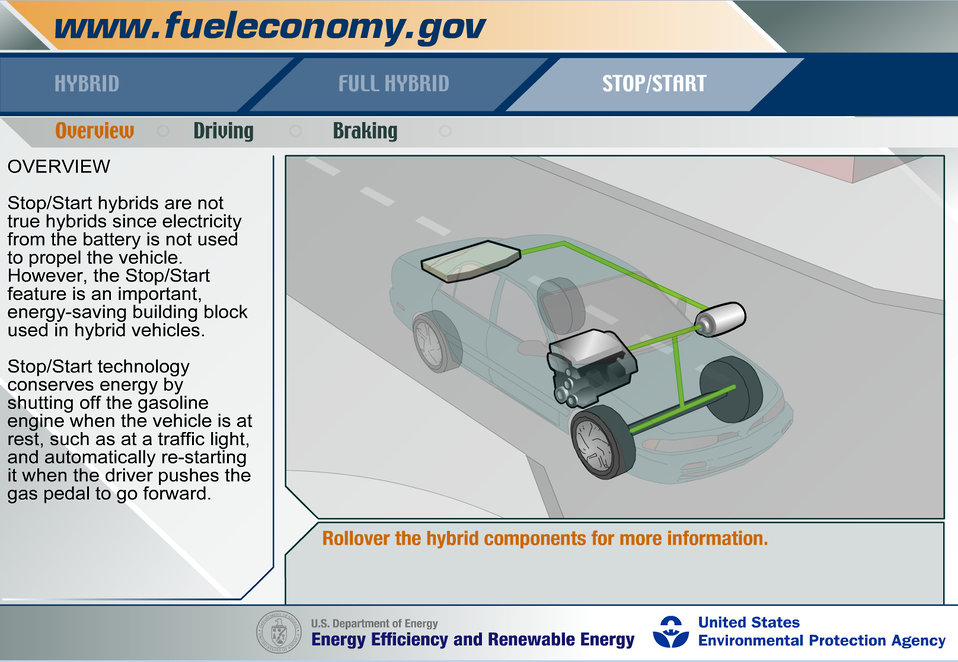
Stop-Start Hybrid Overview

Stop-Start hybrids are not true hybrids since electricity from the battery is not used to propel the vehicle.